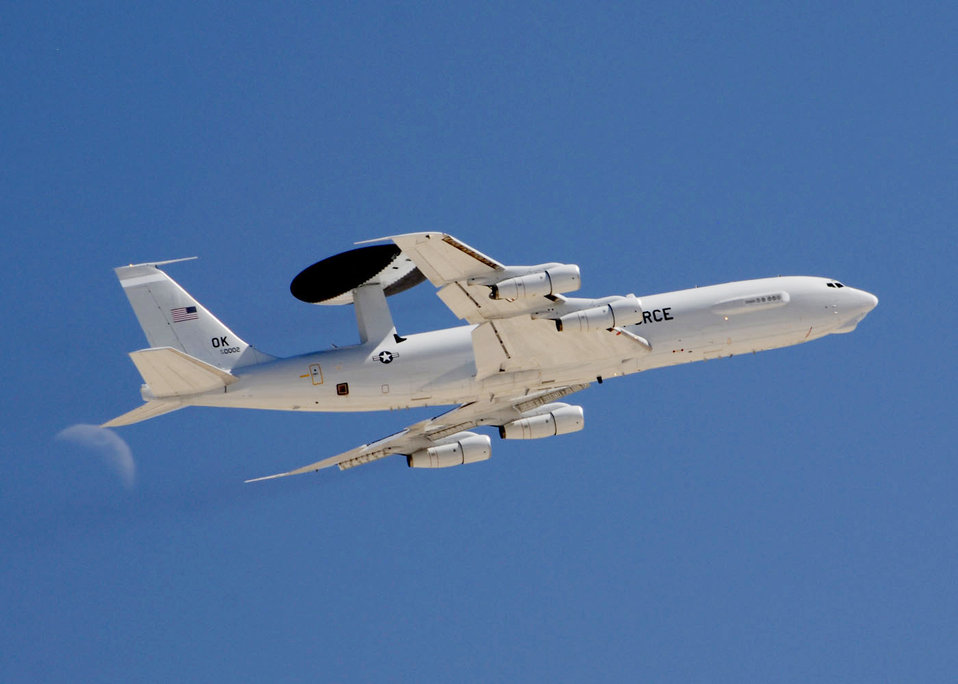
Ears in the sky

An E-3 Sentry AWACS aircraft takes off Aug. 25 from Nellis Air Force Base, Nev., while participating in a Red Flag exercise. Red Flag offers pilots and ground crews training in actual wartime scenarios to increase their combat skills.